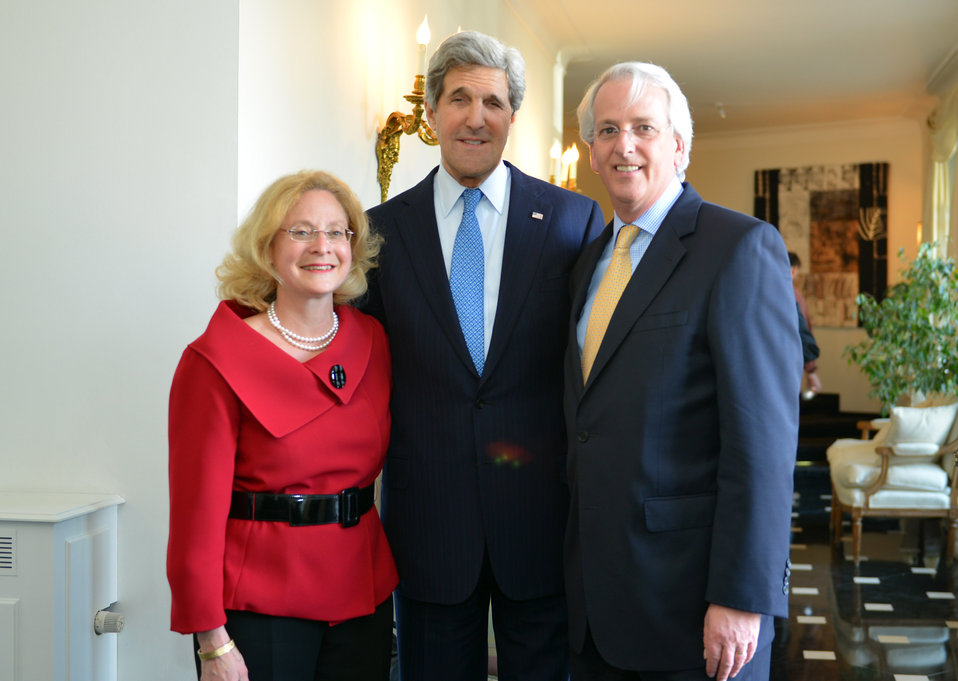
Secretary Kerry With Ambassador Daalder and Mrs. Harris

U.S. Secretary of State John Kerry poses for a photo with U.S. Ambassador to NATO Ivo Daalder and his wife, Elisa D. Harris, at Truman Hall, the Ambassador's residence, in Brussels, Belgium, on April 24, 2013.